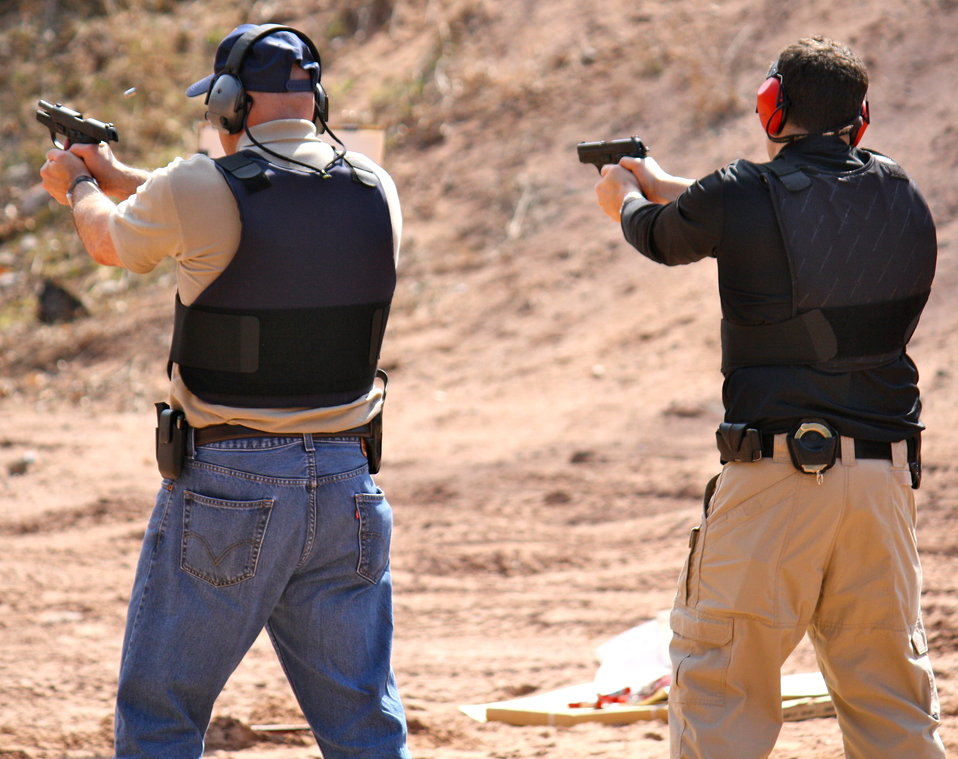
Agents Firing .40 Caliber Handguns

Law Enforcement target practice at outdoor shooting range in Glastonbury, CT.